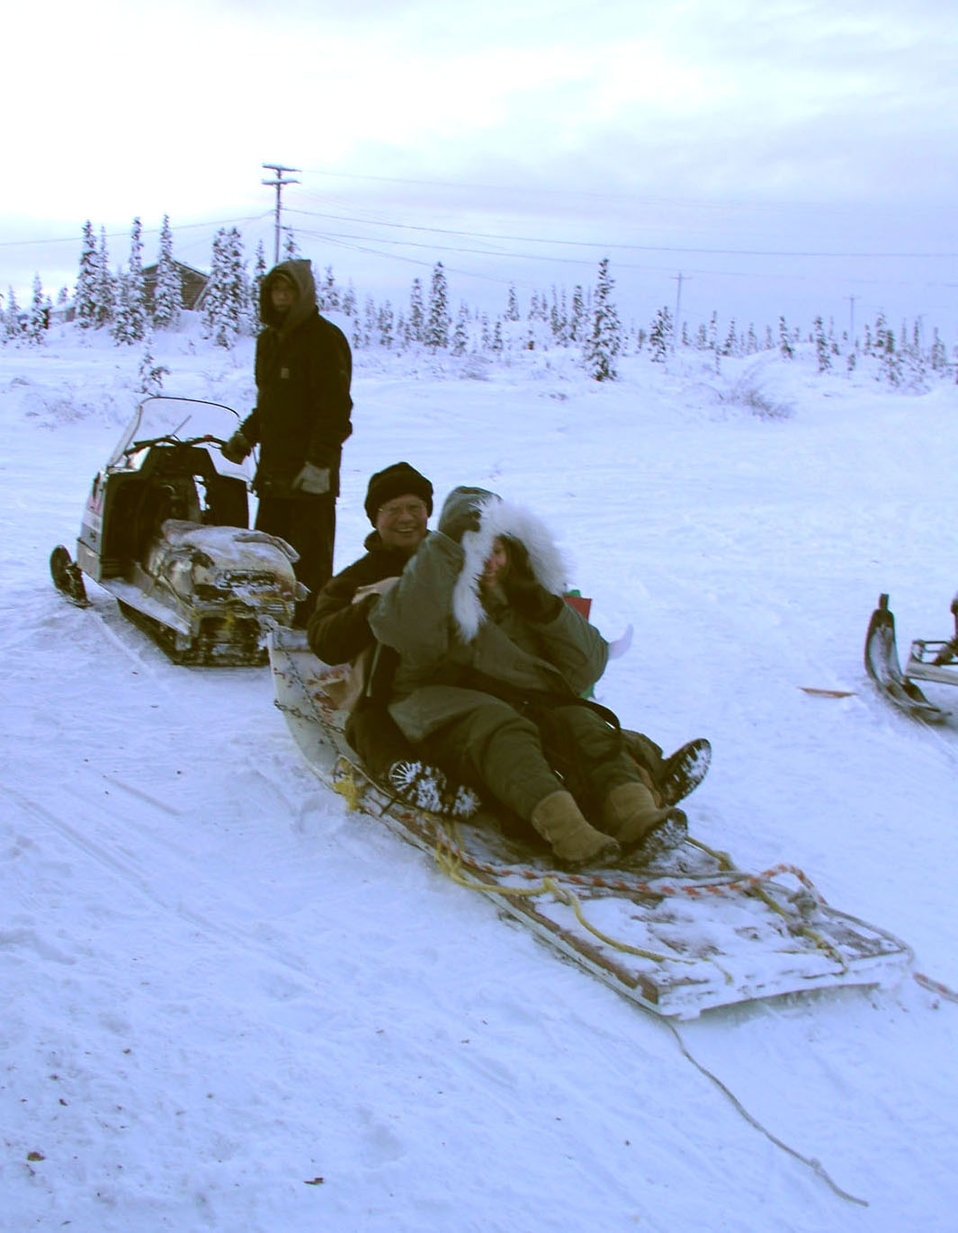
Holiday cheer

ARCTIC VILLAGE, Alaska -- Tech. Sgt. Pete Dibbern and his wife, Valerie, prepare for a 10-minute snow-machine ride from the community hall here back to their C-130 Hercules. Airmen and their spouses from the 517th Airlift Squadron at Elmendorf Air Force Base, Alaska, visited the village to drop off food, gifts and supplies. Dibbern is assigned to the 517th AS.